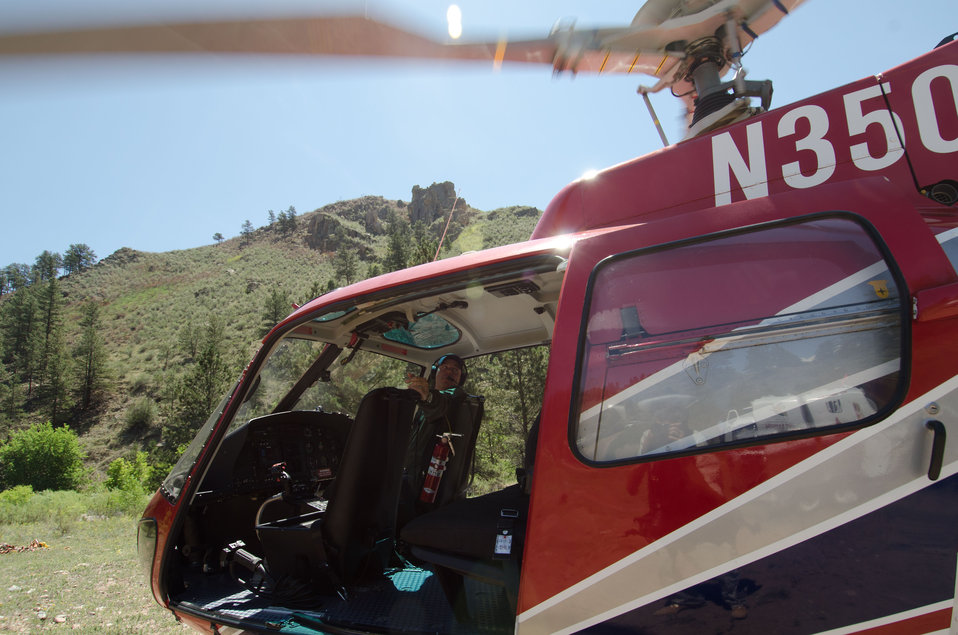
Mountain Air Chief Pilot Tim Booth prepares to take off after refueling his aircraft on Friday, July 20, 2012, at Seaman Reservoir, near Fort Collins, Colo., during the continuing aerial application of straw to mitigate soil and ash runoff from the mountainous terrain leading to Seaman Reservoir, drinking water resource for the City of Greeley. The A-Star Model B (3-blade rotor) aircraft launched from a landing zone at the foot of the reservoir spillway. The 100-150-food sling lines hold and release loads of certified straw weighing 1,400 – 2,000 pounds. 4-person load crews and heavy equipment operators unloaded 1,000 pound straw bales from tractor trailer rigs, stack them near the pickup point, then bring the bales onto cargo nets, open then loosen and adjust the load on cargo nets for helicopters to lift and drop them onto barren, burned out tributary lands. Forest service lands received straw, while private and other lands receive a seed mix and straw to promote ground cover plant growth on ash-covered lands. In total, 1,800 tons of straw will be applied during the 14-day operation. One quarter of the cost was paid by the City of Greeley and the U.S. Department of Agriculture funded the remainder. The Hewlett Gulch Fire was started by a camper’s alcohol stove, on May 14, at the saddle of a picturesque mountain ridge along the Hewlett Gulch Trail of Poudre Canyon, in the Roosevelt National Forest, 60 miles north of Denver. At it’s more than 400 firefighters were battling fires being pushed by 50 mph winds that helped blacken over 12-square-miles of dry ground cover, brush and trees. Many of the trees were already dead and tinder dry from beetle-kill. The water in the reservoir remains clean and clear, while downstream water flow has gone from famous Colorado clear water to nearly black flows of water heavily laden with ash, silt, and burnt debris that recent thunderstorms have already washed down from the mountainsides.